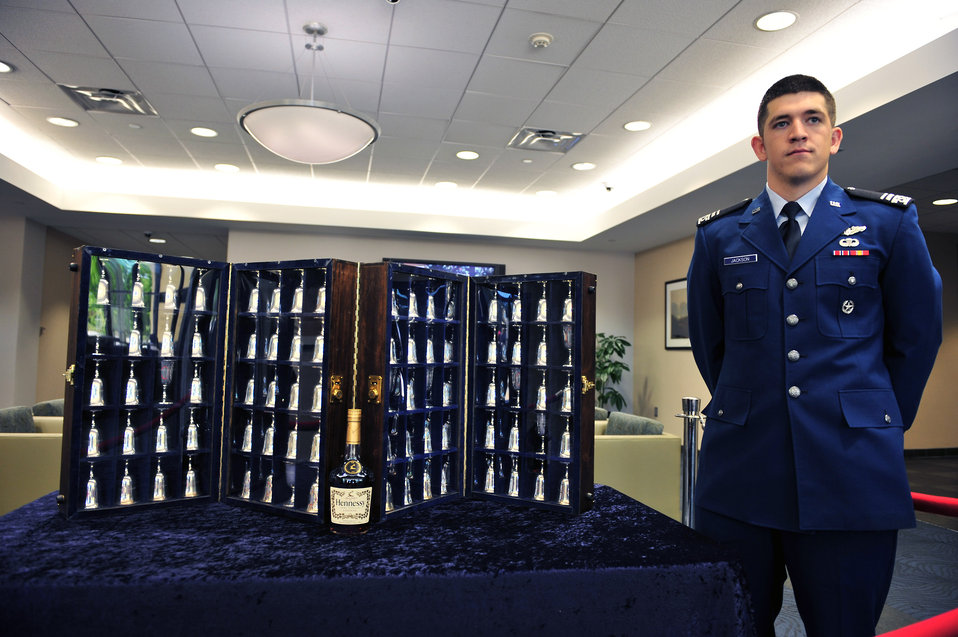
Thousands honor Doolittle Raiders at the 67th Reunion

U.S. Air Force Academy Cadet 1st Class Dan Jackson guards the Doolittle Raiders silver goblets April 16 at Columbia, S.C. during a ceremony celebrating the 67th anniversary of the raid. There are 80 goblets representing all 80 Doolittle Raiders. When a raider passes on; the goblet is turned upside down.